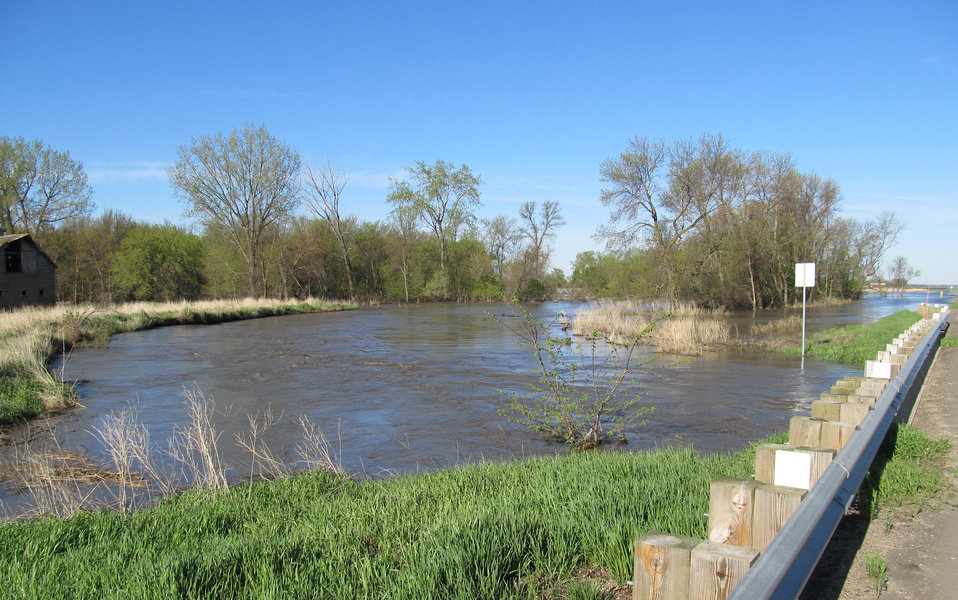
Flooding and water damage in the Park and Tongue River Watersheds located in Cavalier, Pembina and Cavalaier Counties in ND on Thursday, May 23, 2013.